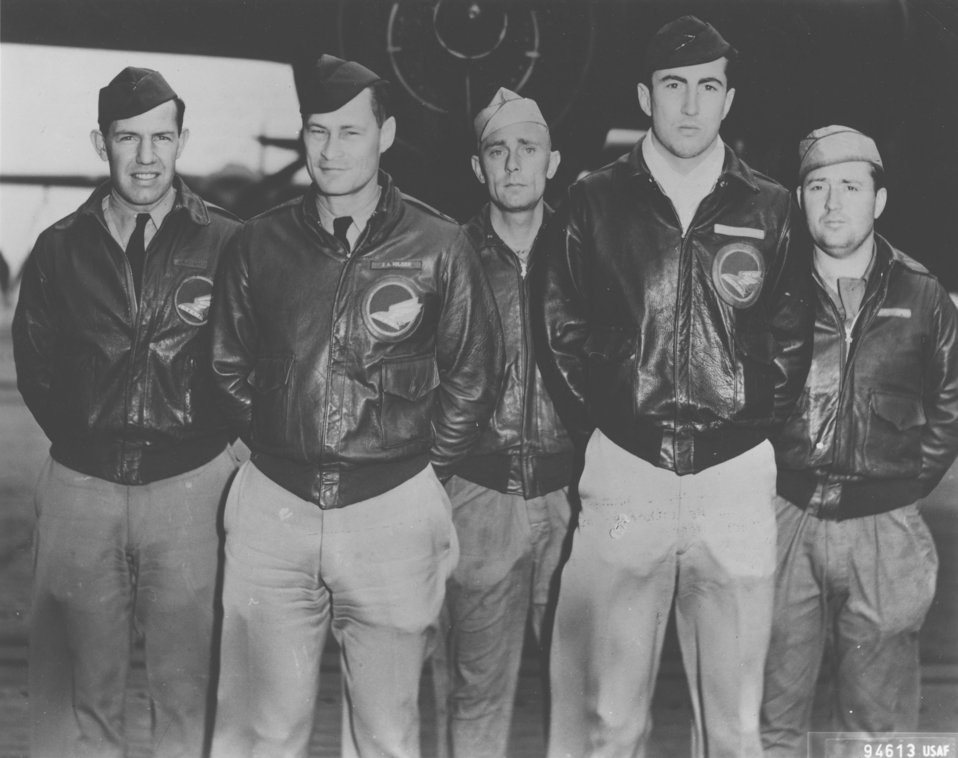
Doolittle Tokyo Raiders, Crew No. 14

Crew No. 14 (Plane #40-2297, target Nagoya): 89th Reconnaissance Squadron, front row: Maj. John A. Hilger, pilot; and Lt. Jack A. Sims, copilot; back row: Lt. James H. Macia Jr., navigator/bombardier; Staff Sgt. Job Eierman, flight engineer; and Staff Sgt. Edwin V. Bain, gunner.